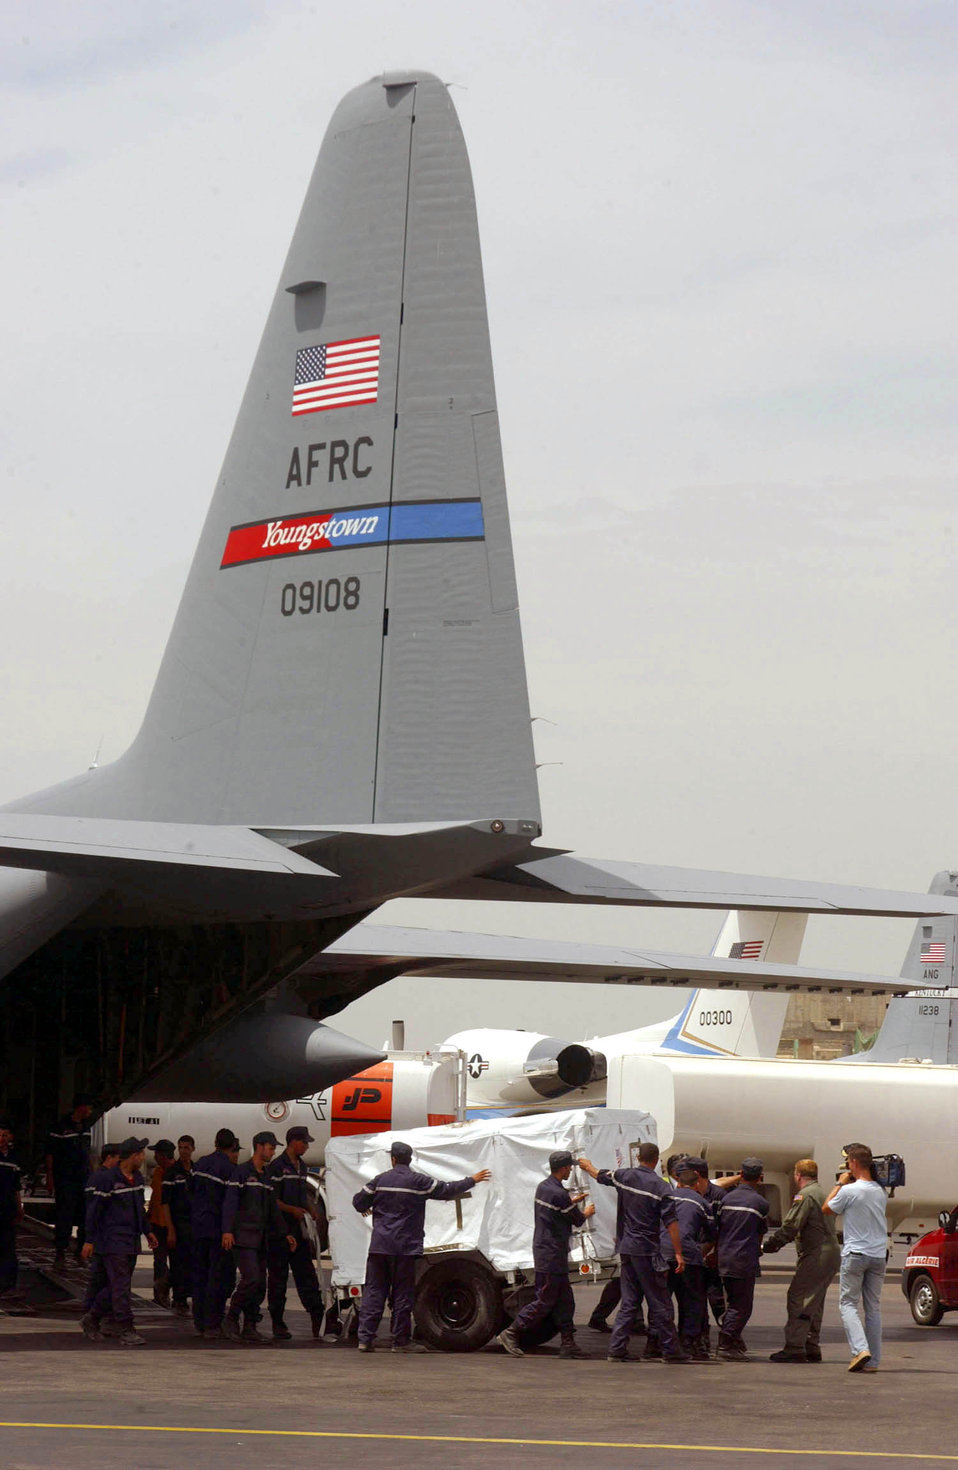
Help is on the way

ALGIERS, Algeria -- Airmen of the 910th Airlift Wing, an Air Force Reserve unit from Youngstown, Ohio, unload humanitarian relief supplies from a C-130 Hercules aircraft in earthquake-stricken Algeria. Two C-130s from 123rd Air National Guard, Louisville, Ky., also flew supplies from Ramstein Air Base, Germany.